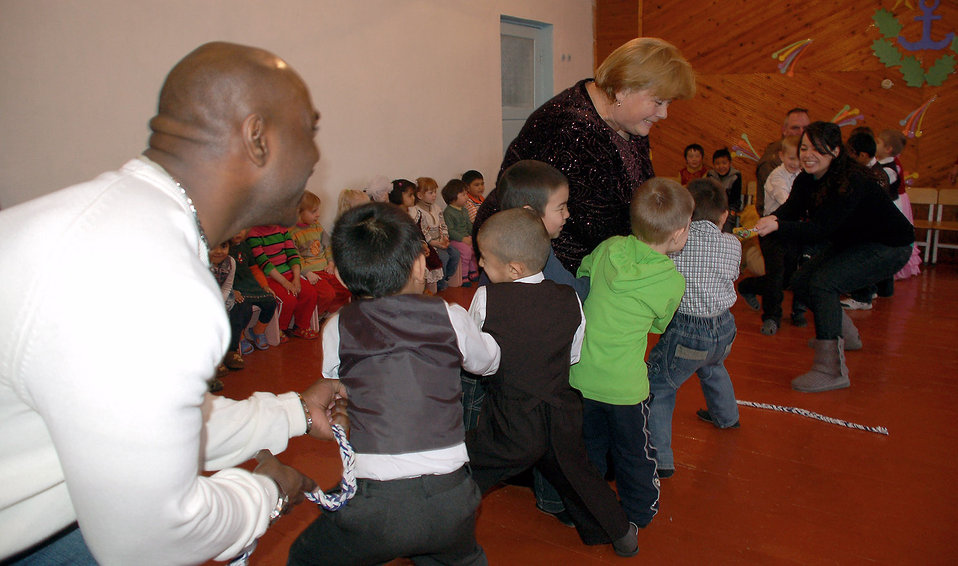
Kyrgyz children thank Manas volunteers

Staff Sgt. Chris Moore serves as anchor for a tug-of-war game with kindergarteners during a Feb. 20 celebration at the Vasilievka Kindergarten School in Kyrgyzstan. More than 75 children put on a special performance for volunteers from nearby Manas Air Base, Kyrgyzstan, to thank them for their support in helping rebuild their school over the past seven years. Sergeant Moore is assigned to the 376th Air Expeditionary Wing staff.